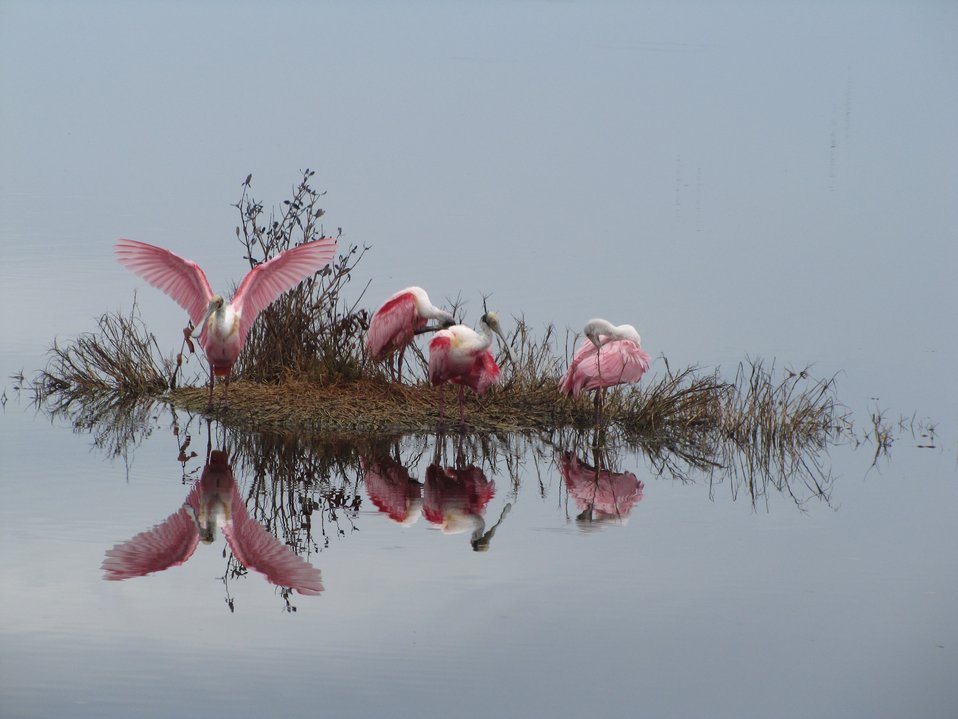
Roseate spoonbills

Merritt Island National Wildlife Refuge, FL.